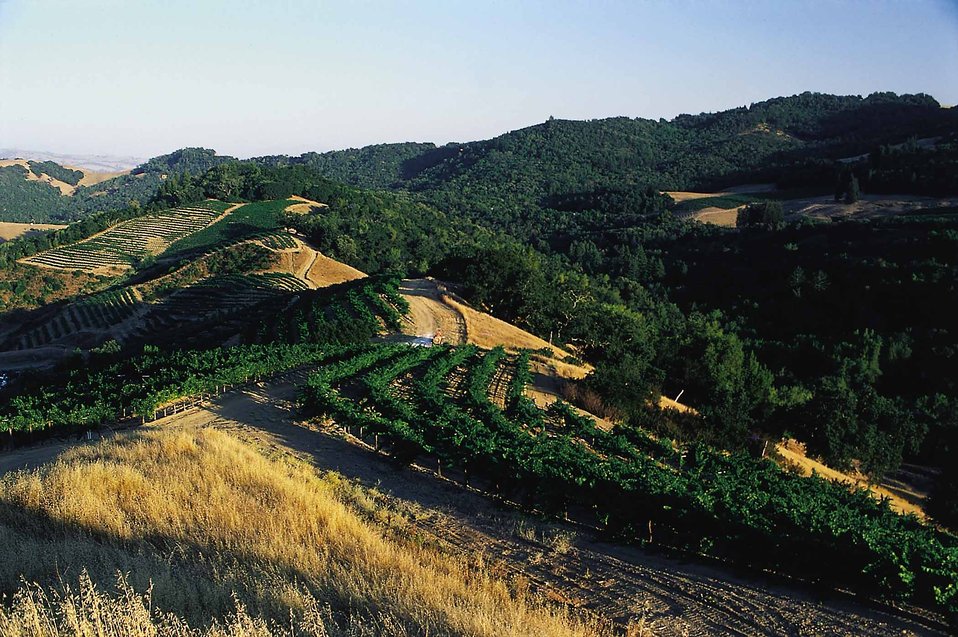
Grapes on steep foothills of California.